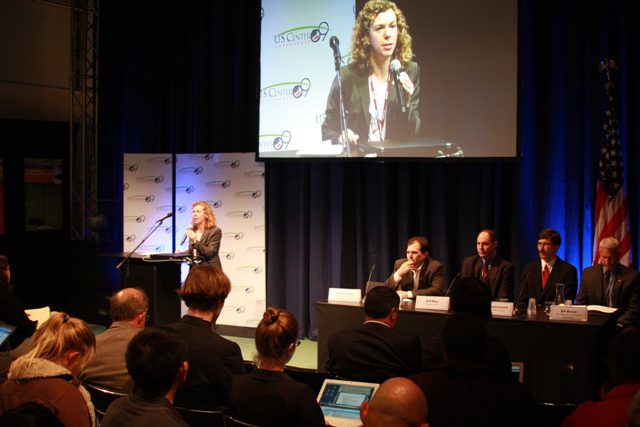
'Development Agenda for Clean Energy and Transfer of Technologies' Presentation at COP-15

Lisa Jacobson, President of the Business Council for Sustainable Energy gives a presentation on the 'Development Agenda for Clean Energy and Transfer of Technologies' at the U.S. Center during COP15 (Conference of the Parties to the UN Framework Convention on Climate Change) in Copenhagen, Denmark December 10, 2009.